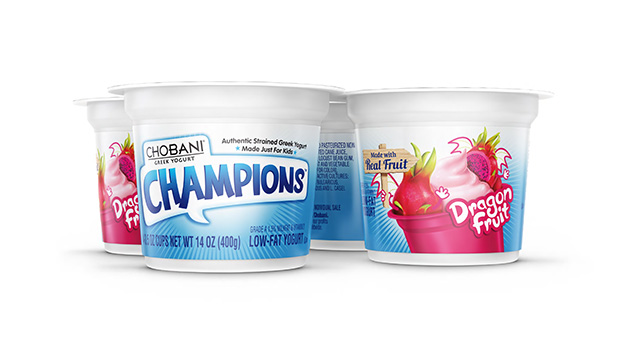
RECALLED – Greek yogurt products

September 6, 2013 – Product Recall – Chobani, Inc. Voluntarily Recalls Greek Yogurt Because of Product Concerns.